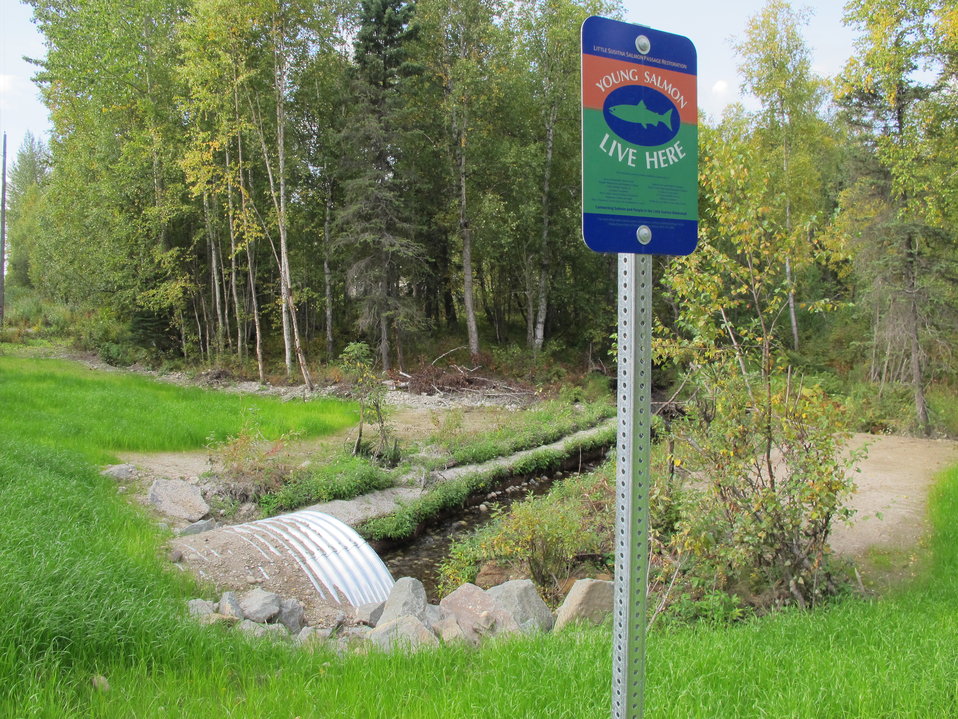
Salmon Live Here

A recently completed fish friendly culvert in Southcentral Alaska. USFWS/Katrina Mueller